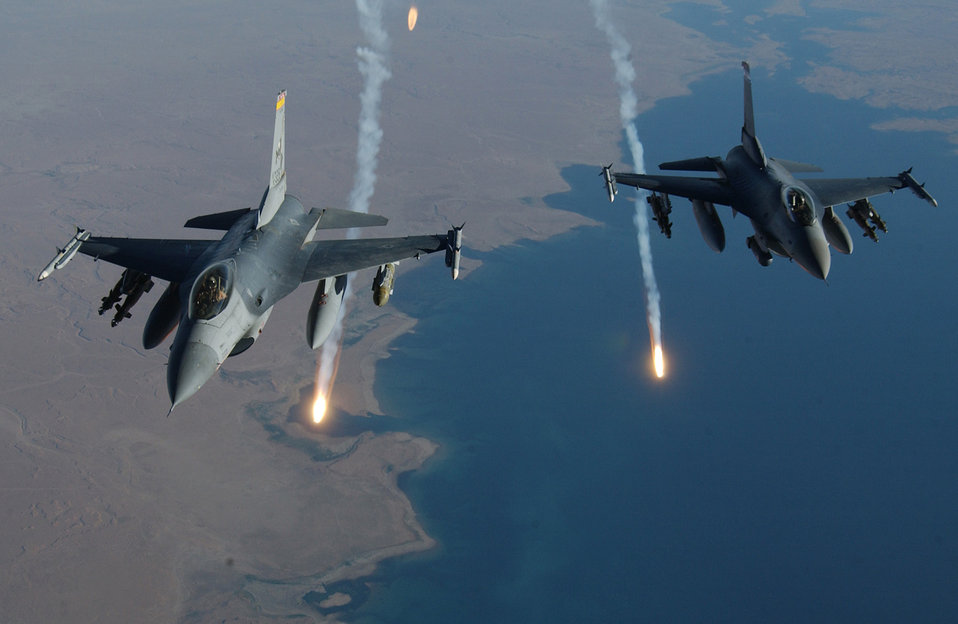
Air power!

OVER IRAQ -- A pair of F-16 Fighting Falcons launch flares during a mission Aug. 18. The aircraft are assigned to the 332nd Air Expeditionary Wing at Balad Air Base, Iraq, from the New Mexico Air National Guard.